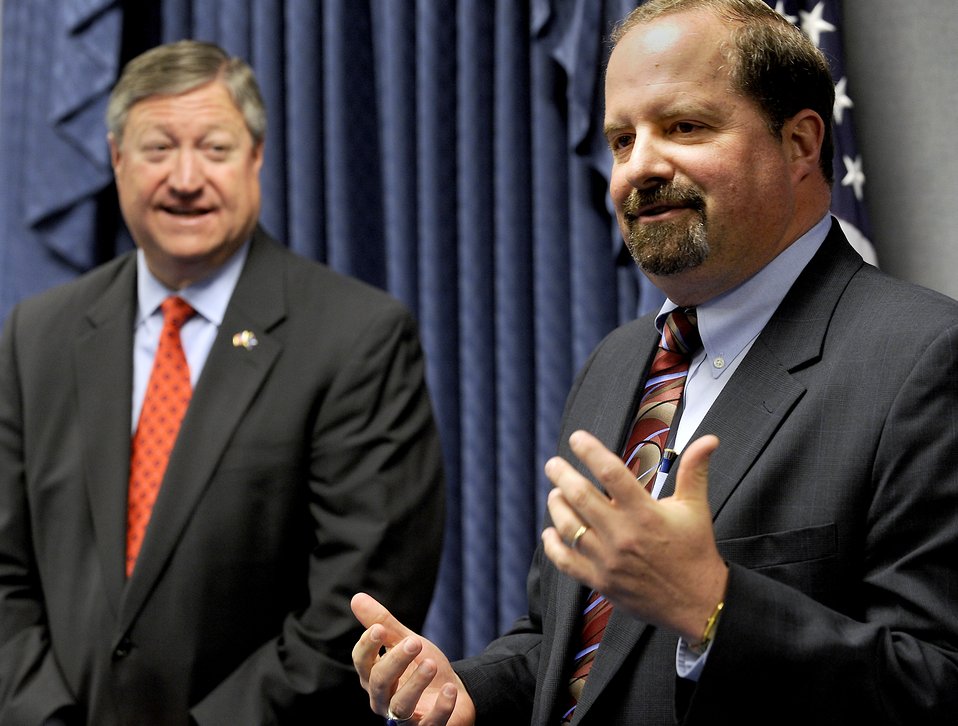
Air Force raises $2.3 million for CFC, takes top honors

Secretary of the Air Force Michael Donley listens to Timothy Beyland congratulate the key workers in record-breaking achievements during this year's Combined Federal Campaign on May 2, 2012, during a Pentagon ceremony. Beyland is an the administrative assistant to the secretary of the Air Force.